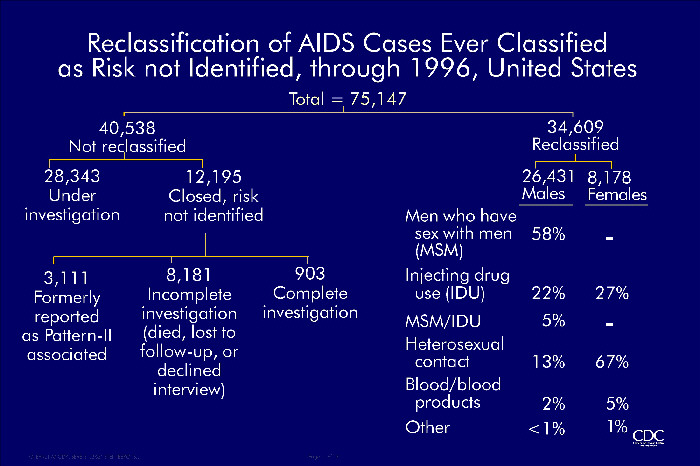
Reclassification of AIDS Cases Ever Classified as Risk Not Identified through 1996, United States